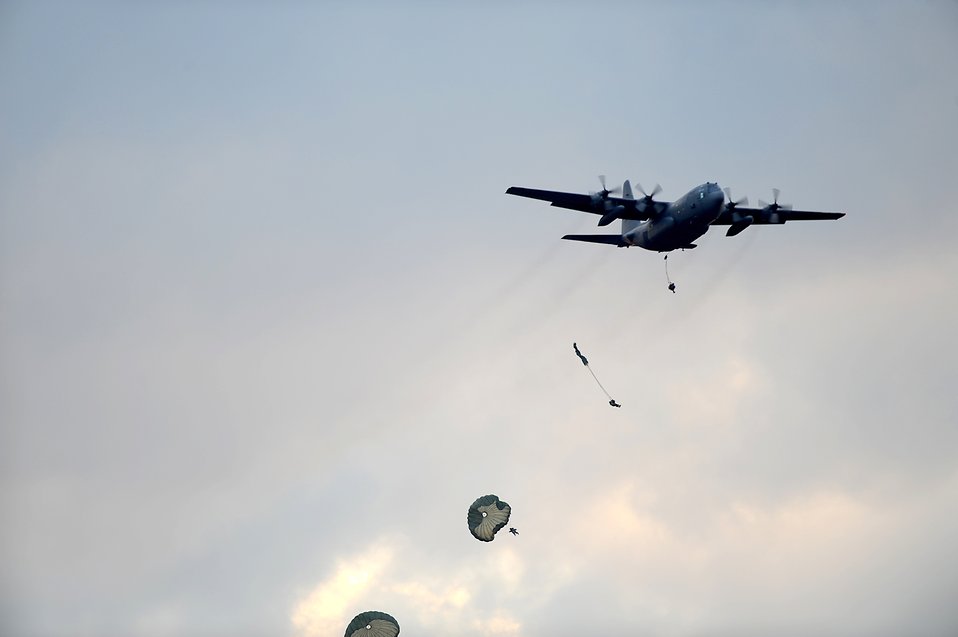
Joint Forces Entry Exercise

Soldiers jump from the troop door of a C-130 Hercules over a drop zone during airborne operations Sept. 12, 2010, at Fort Bragg, N.C. Soldiers are assigned to the 82nd Airborne Division at Fort Bragg.